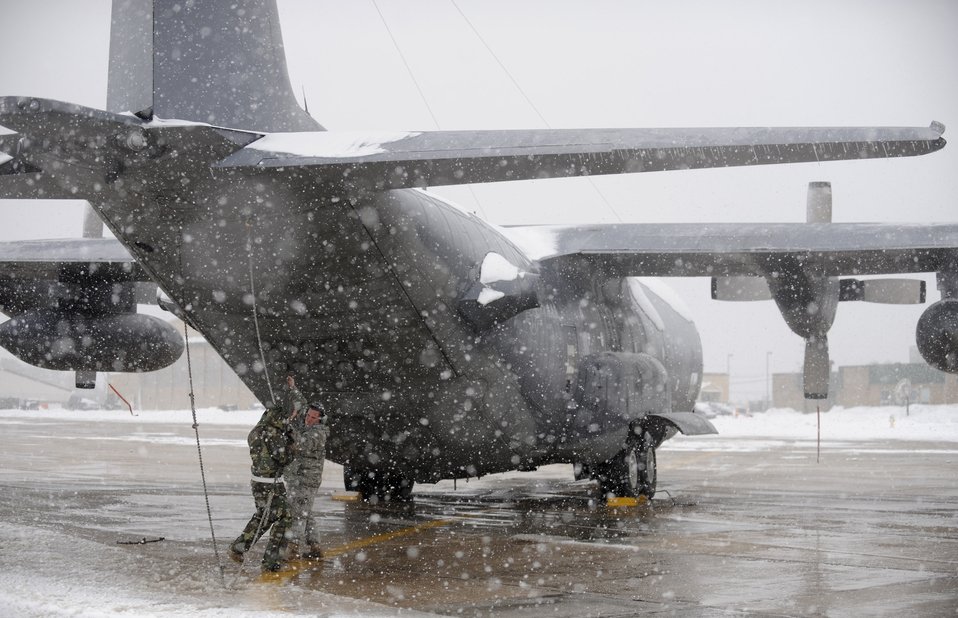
Staying in place

Airmen with the 106th Aircraft Maintenance Squadron work to secure a HC-130 Hercules during a snowstorm at the New York Air National Guard's 106th Rescue Wing at Francis S. Gabreski Airport in Westhampton Beach, N.Y., Feb. 26, 2010.